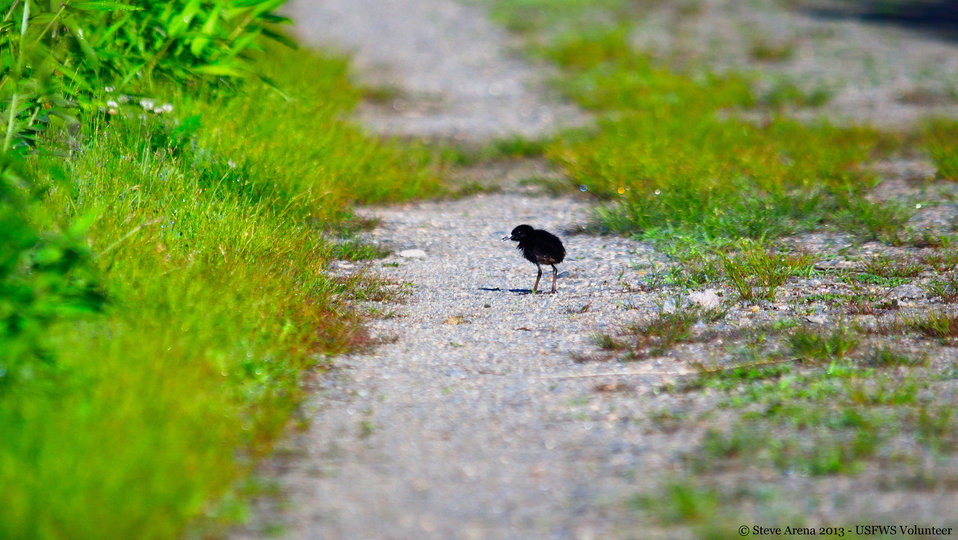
Virginia Rail (Rallus limicola) - newborn chick

Great Meadows National Wildlife Refuge, Concord, MA

Credit: Steve Arena/USFWS

09 June 2013